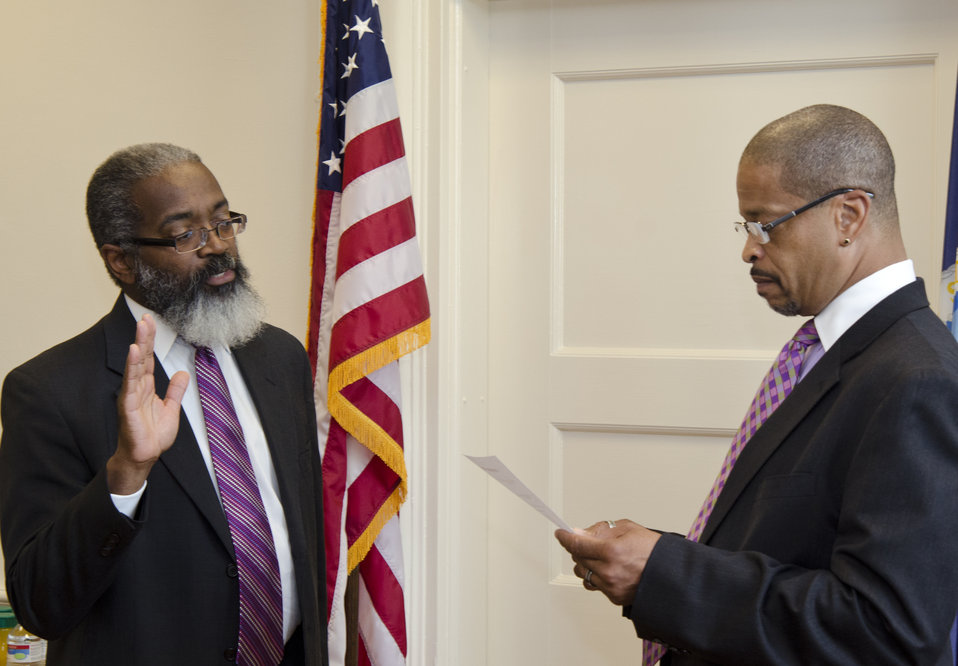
Dr. Greg Parnham is sworn as the U.S. Department of Agriculture (USDA) Assistant Secretary for Administration by USDA Office of Human Resources Management William J. Milton, Jr. at USDA in Washington, D.C. on Thursday, Jun. 6, 2013.